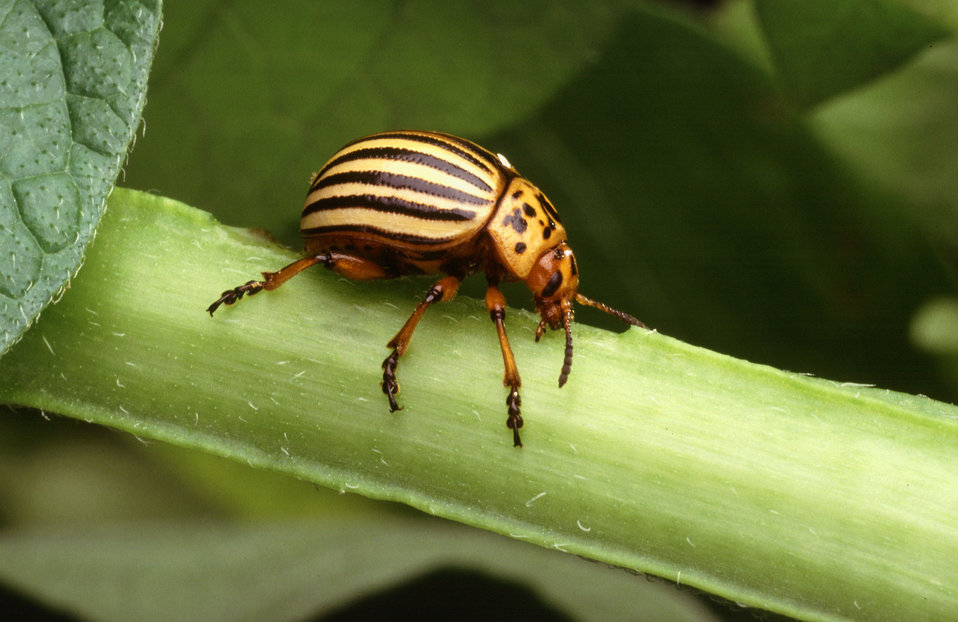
Colorado potato beetle (Leptinotarsa decemlineata) is destructive pest of potato crops. It is approximately 10 0.39 in long, with a bright yellow/orange body and five bold brown stripes along the length of each of its elytra.